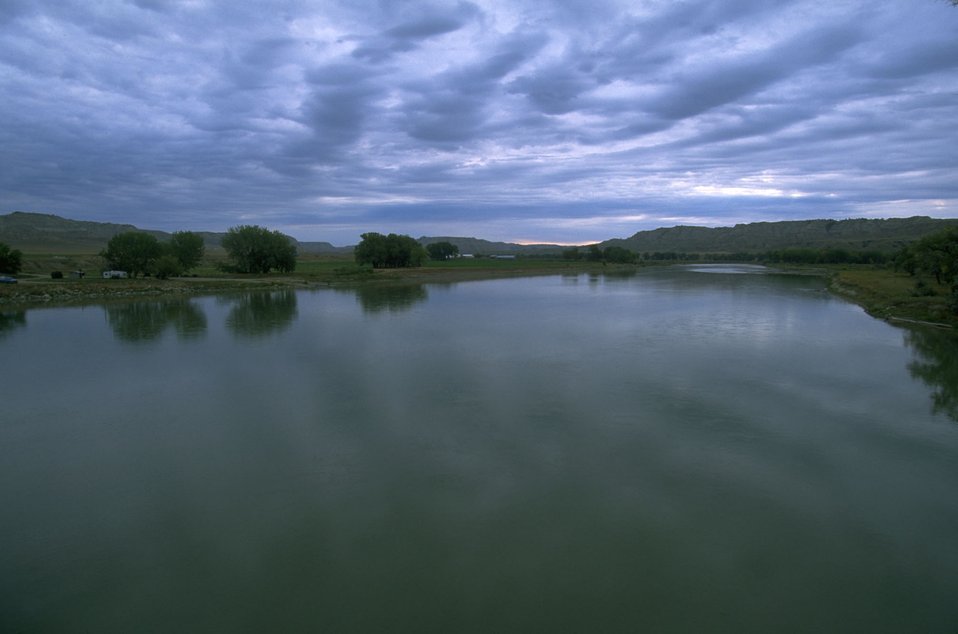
Judith Landing along Upper Missouri National Wild and Scenic River